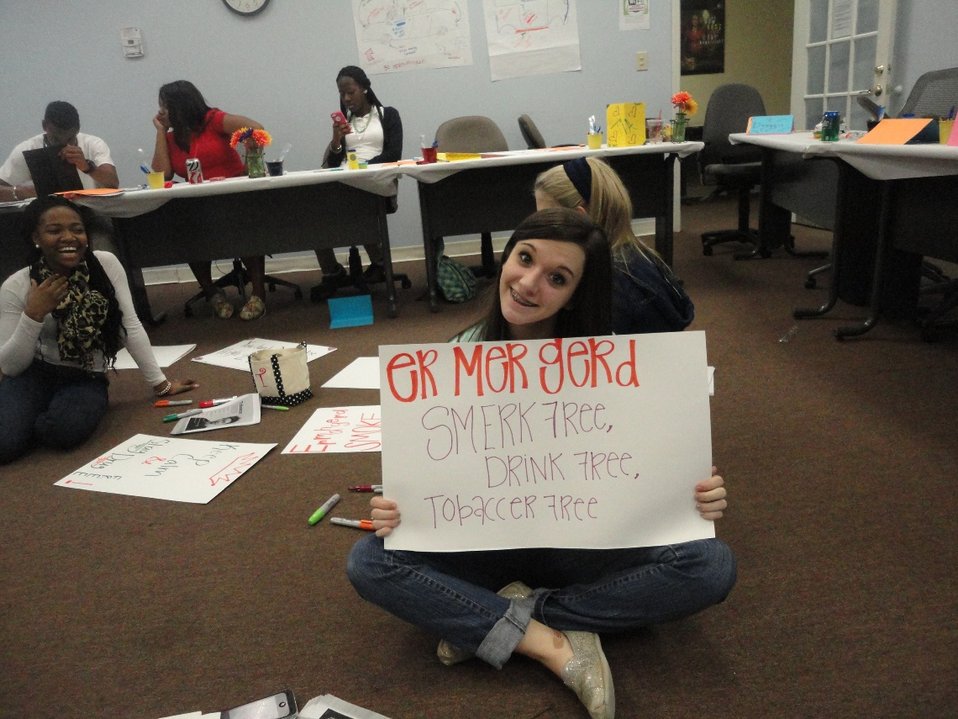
DREAM's, MS Student Advisory Board of Youth Highway Safety NDFW 2013

Mississippi High School Students participate in NDFW 2013 events.